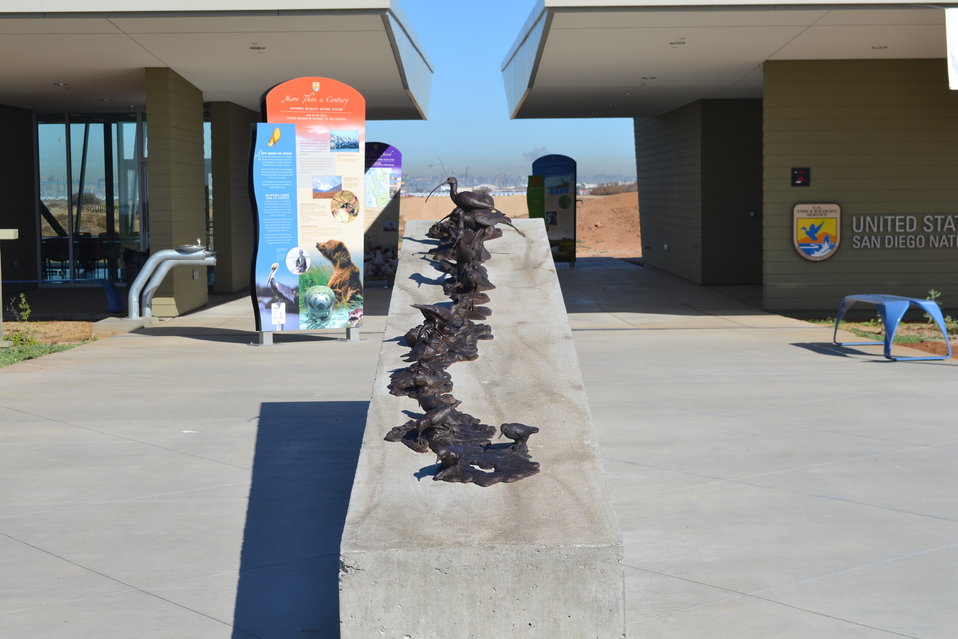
New interpretive elements finished by the end of September 2011

A bronze sculpture depicting birds feeding at different elevations in the marsh intrigue visitors at San Diego National WIldlife Refuge Complex Headquarters. Colorful interpretive panels follow, between the administrative building and the Resource Room (classroom). Lisa Cox/USFWS